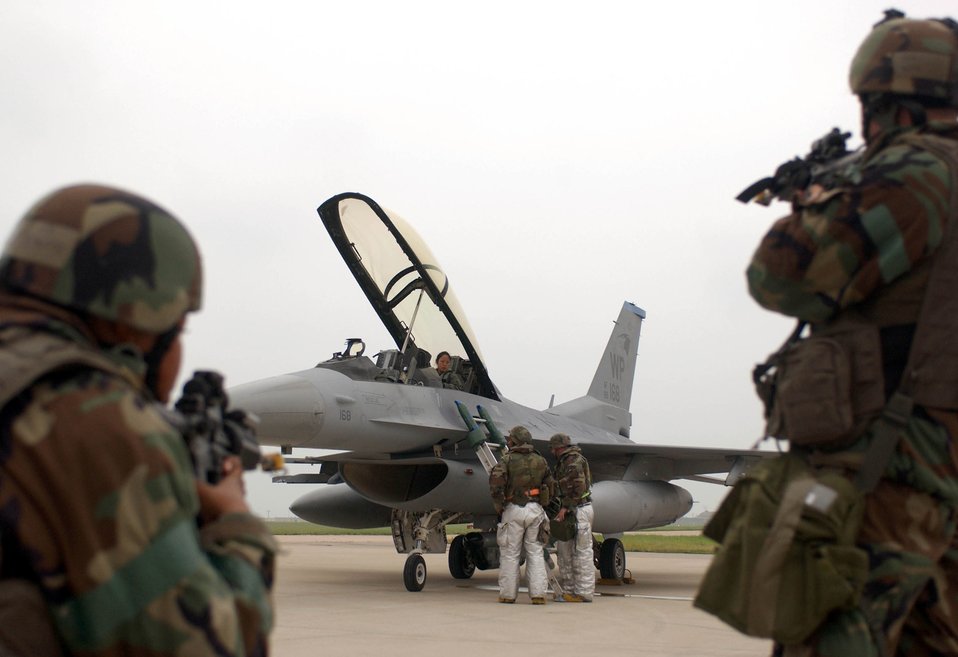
Maintaining credible deterrence

Defenders from the 8th Security Forces Squadron provide security as Senior Airmen Lionel James (left) and Preston Walden escort an unidentified individual off the flightline July 26 at Kunsan Air Base, South Korea. The scenario is part of the week-long 7th Air Force Peninsula-Wide Combat Employment Readiness Exercise taking place July 23 through 27. The exercise tests the ability of Air Force fighter wings to properly defend South Korea through the use of airpower. Airmen James and Walden are 8th Civil Engineer Squadron firefighters.